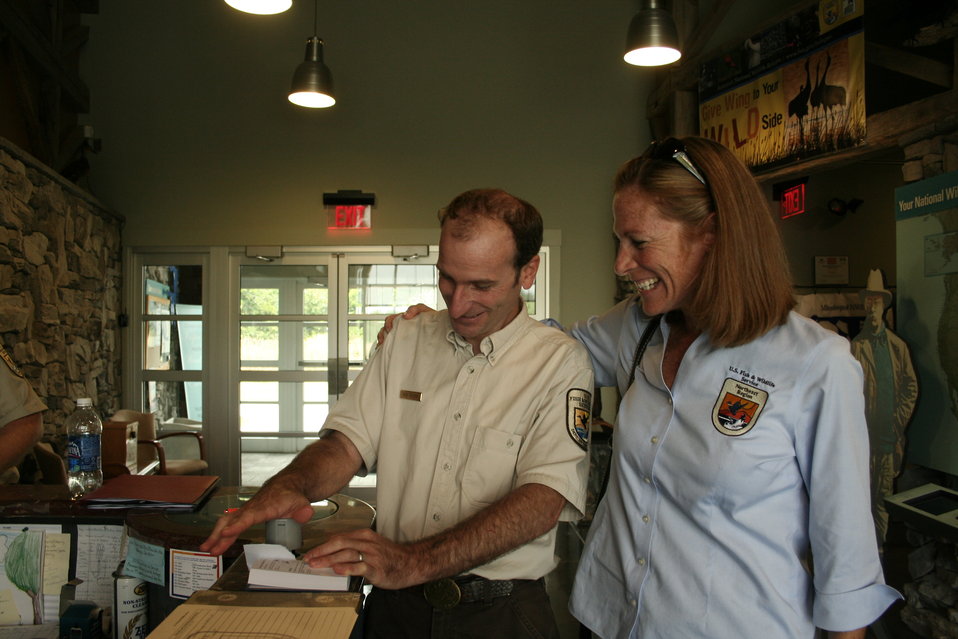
Refuge Manager Ken Sturm and Acting Regional Director Wendi Weber

Missisquoi National Wildlife Refuge Manager Ken Sturm and Acting Northeast Regional Director Wendi Weber stamp Wendi's Blue Goose Passport.